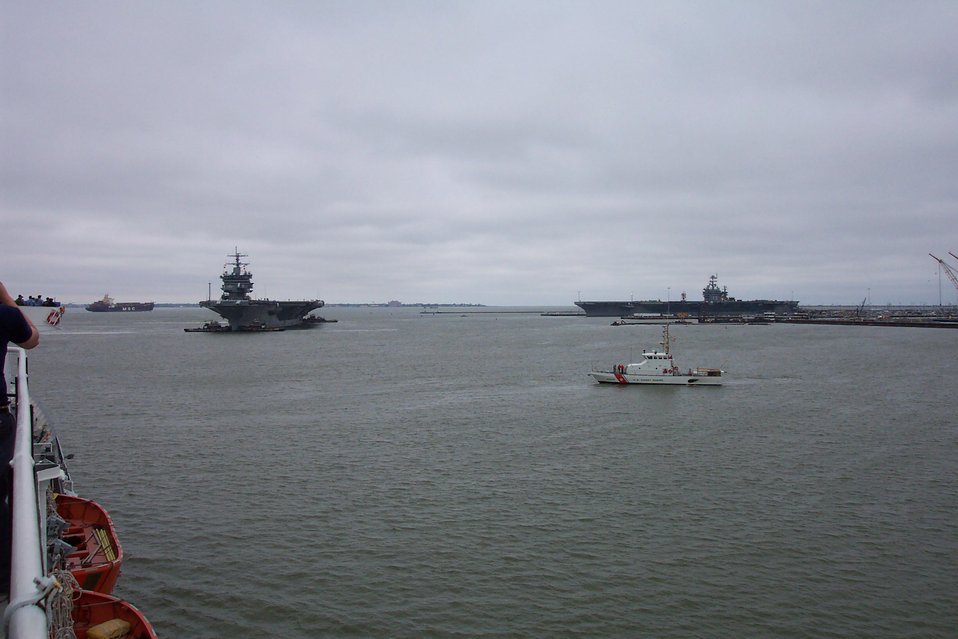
Docking USS ENTERPRISE with USS HARRY S. TRUMAN at dock.